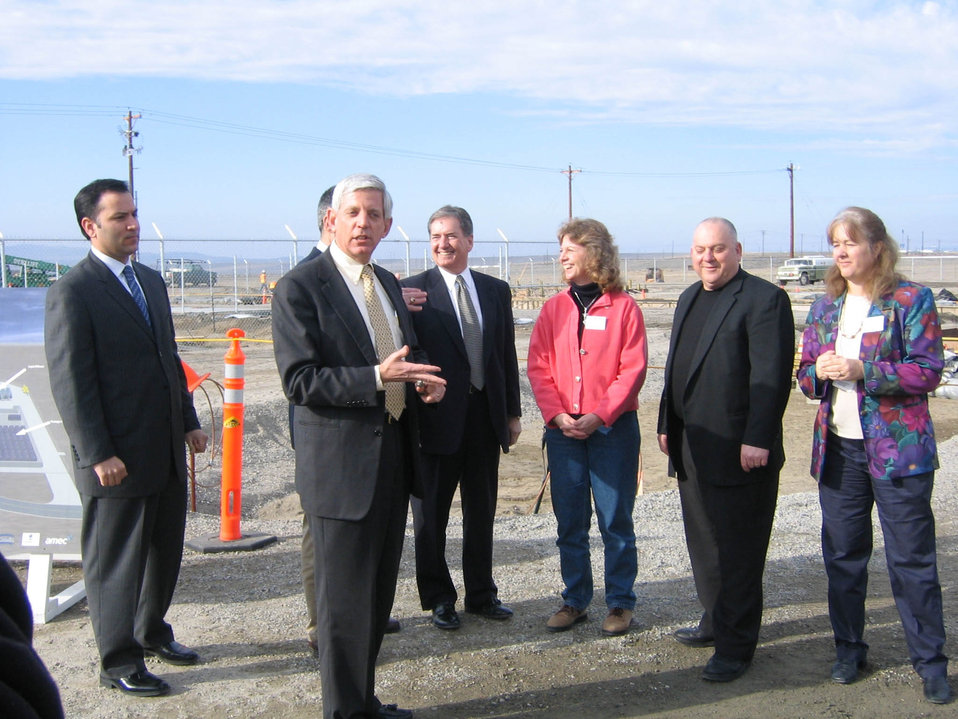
BVPP Press Conference 2005